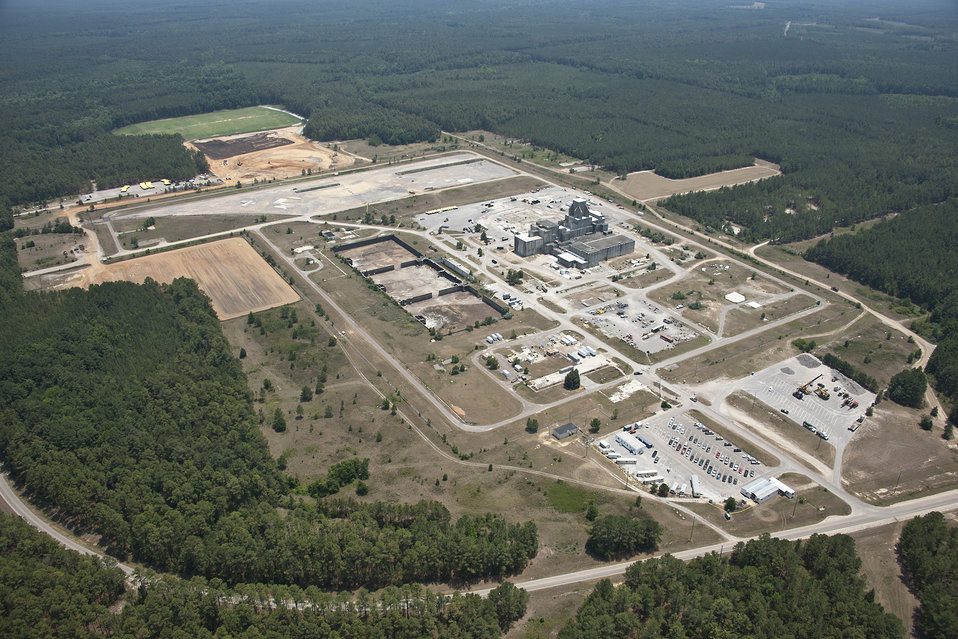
Savannah E Site

At the Savannah River Site (SRS) in South Carolina, the E Area is used for storage and disposal of waste materials. Much of this work is related to SRS Recovery Act Program's disposition of transuranic and low-level waste generated by deactivation activities. This aerial view shows administrative offices and shipping areas, various pads where transuranic waste is prepared for shipping, and trenches for the burial of low-level waste.